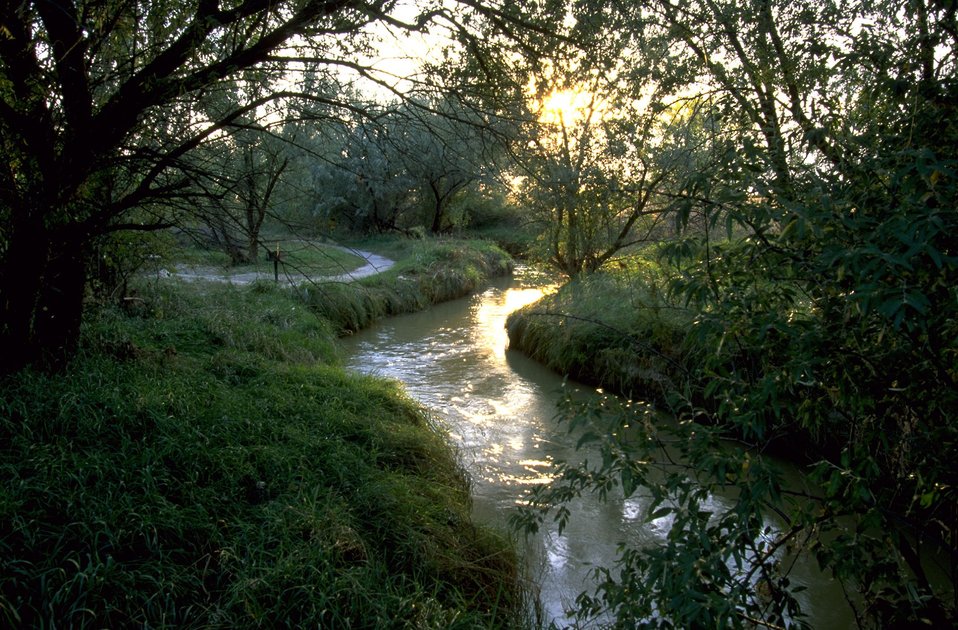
Sum shining on Jones Creek with trail in the background